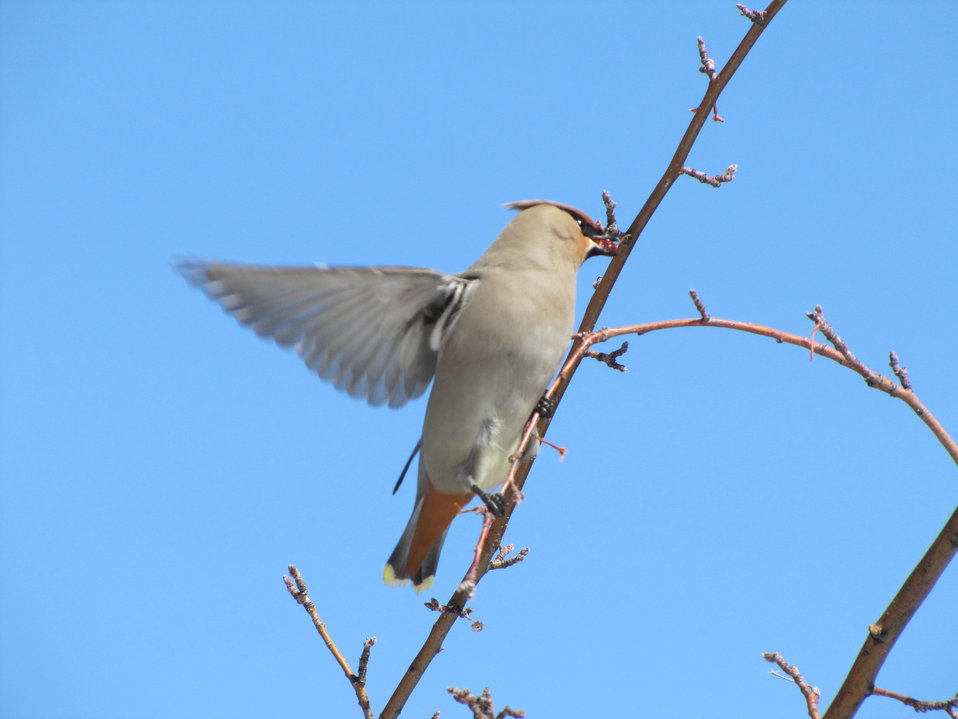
Snack on the Fly

... then grabs another from a nearby branch. Bohemian Waxwings will pluck fruit while perched, or they may hover briefly to snatch it.